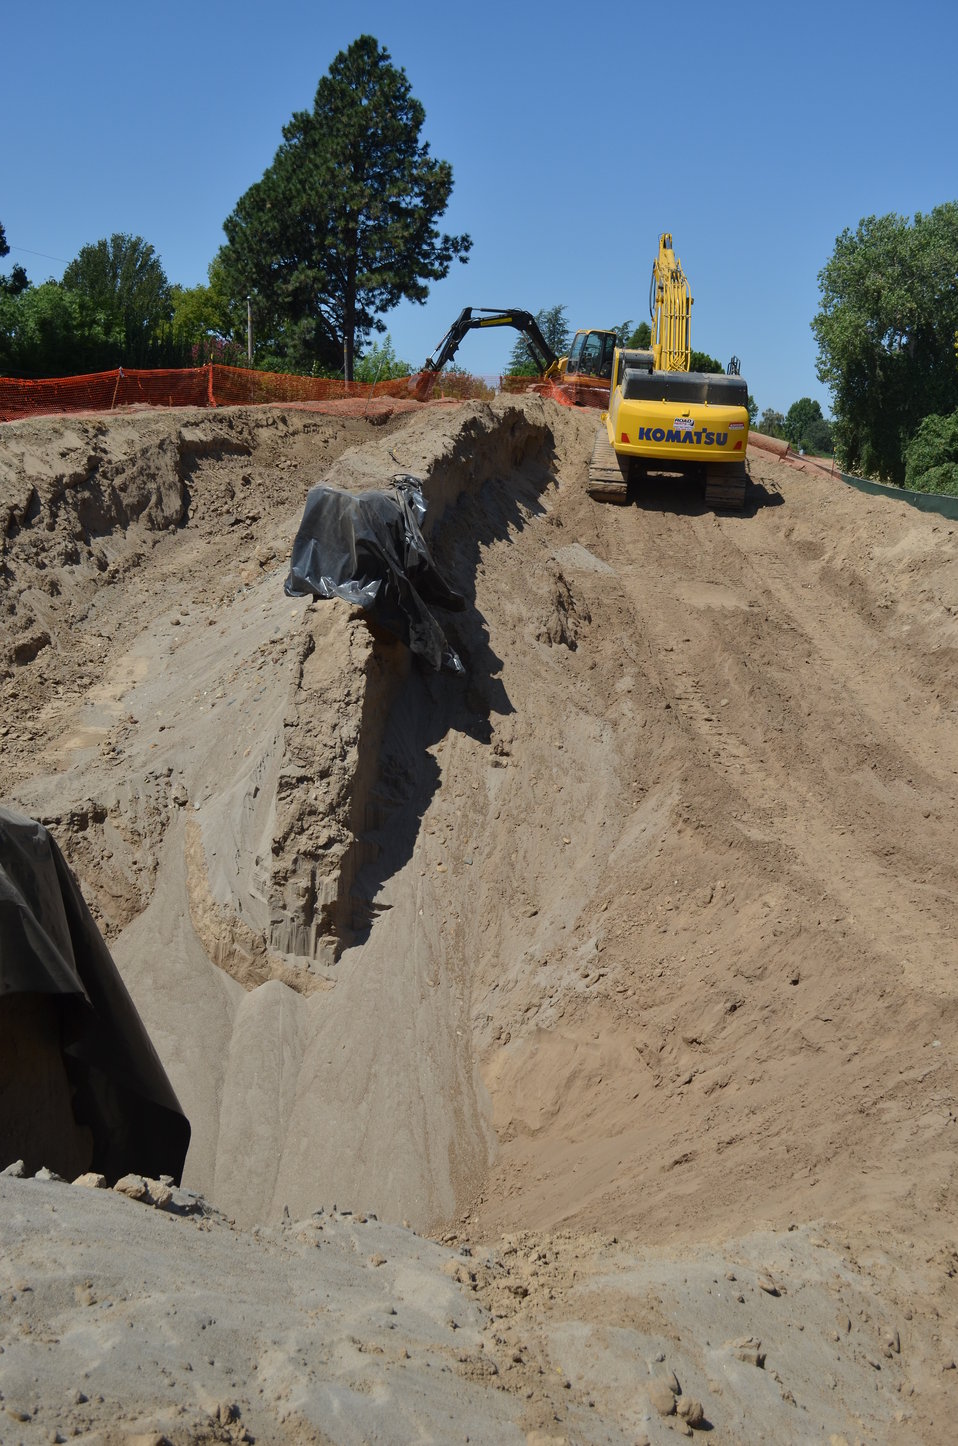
American River seepage wall partially exposed

A seepage wall in an American River is partially exposed Aug. 21, 2013 near the River Park neighborhood of Sacramento, Calif. The U.S. Army Corps of Engineers Sacramento District has begun efforts to complete the wall and replace a sump station's piping that prevented the wall's completion more than a decade ago. The district built more than 20 miles of seepage cutoff walls into American River levees between 2000 and 2002, but work was set aside for later where construction was complicated by encroachments like utilities, power lines, bridges and sump stations.